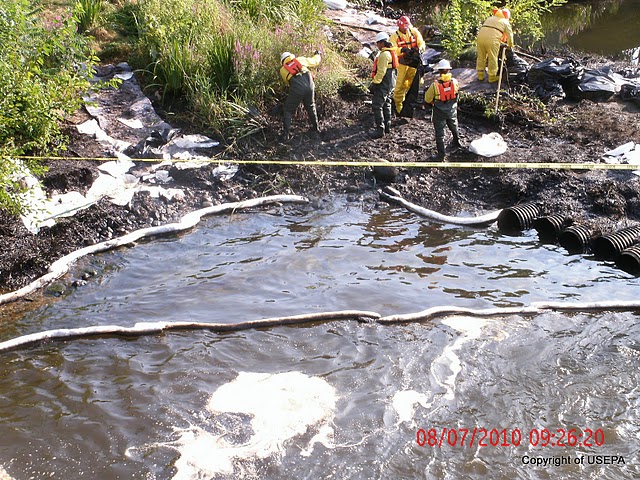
Siphon Dam Cleanup

August 7, 2010 - Cleanup crews working at a boom and siphon dam containment area on the Kalamazoo River near Battle Creek, Michigan